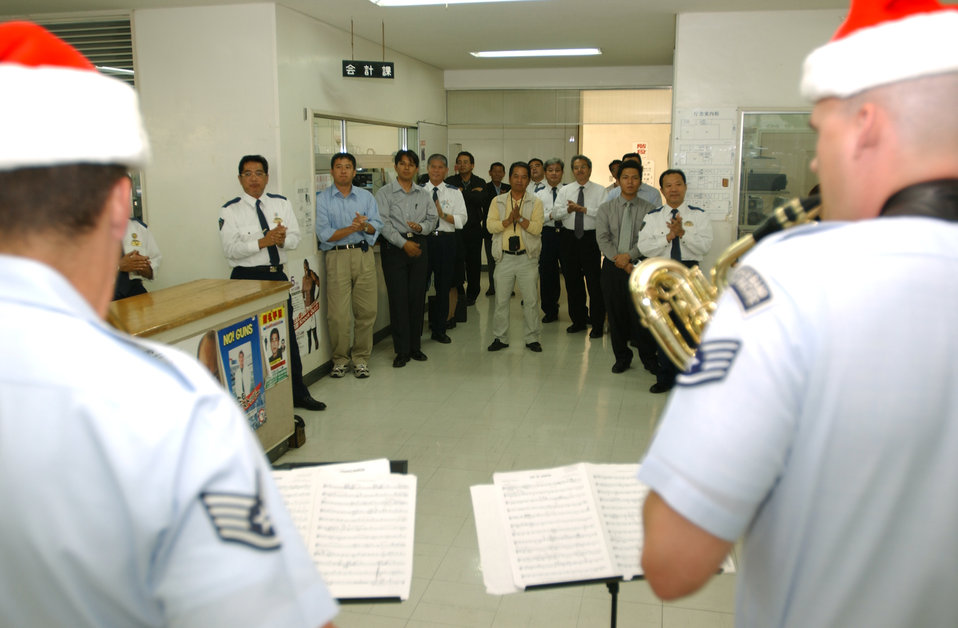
Santa serenade

OKINAWA CITY, Japan -- Staff Sgt. Jeff Saunders (right) and Staff Sgt. James Wagner of the Pacific Saxophone Trio play Christmas songs at a police station here Dec. 14. The trio is part of the Pacific Air Forces Band-Asia based at Yokota Air Base, Japan. They played for units at nearby Kadena AB and at several public locations during a two-day visit to Okinawa.